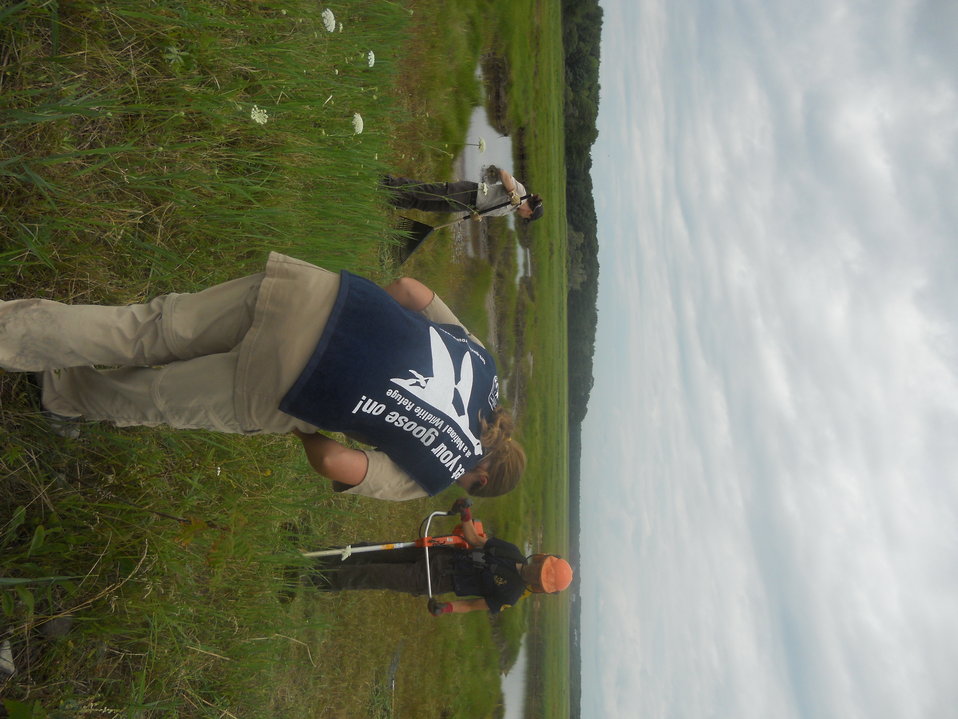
Get Your Goose On!

USFWS Toni Mikula Gets Her Goose On while helping out.